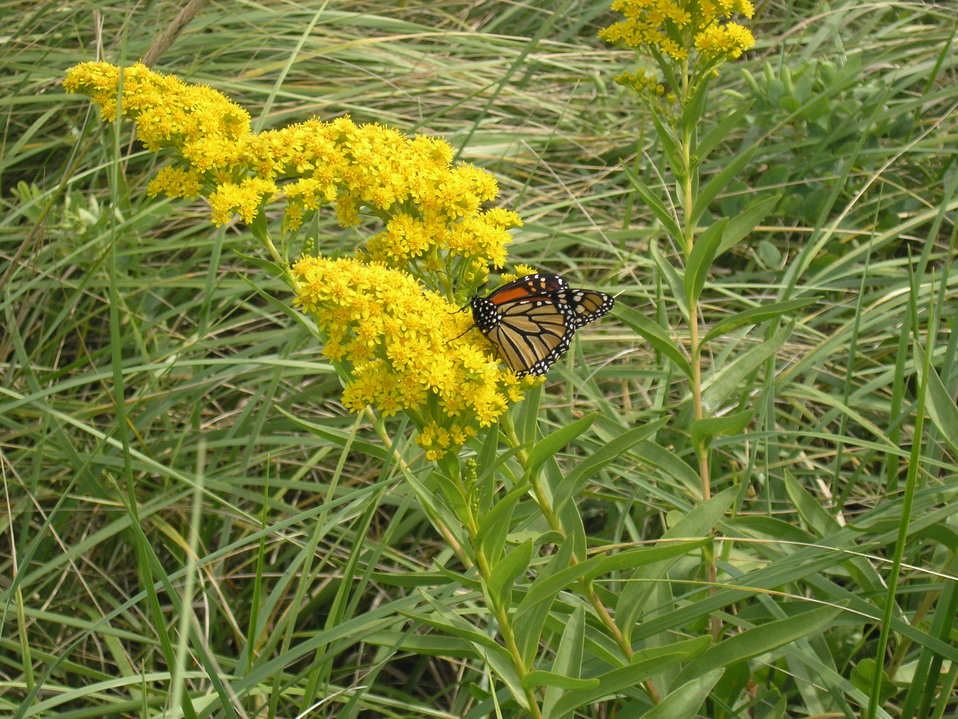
Monarch on Goldenrod

Monarch butterfly on goldenrod at Hampton Beach, NH.